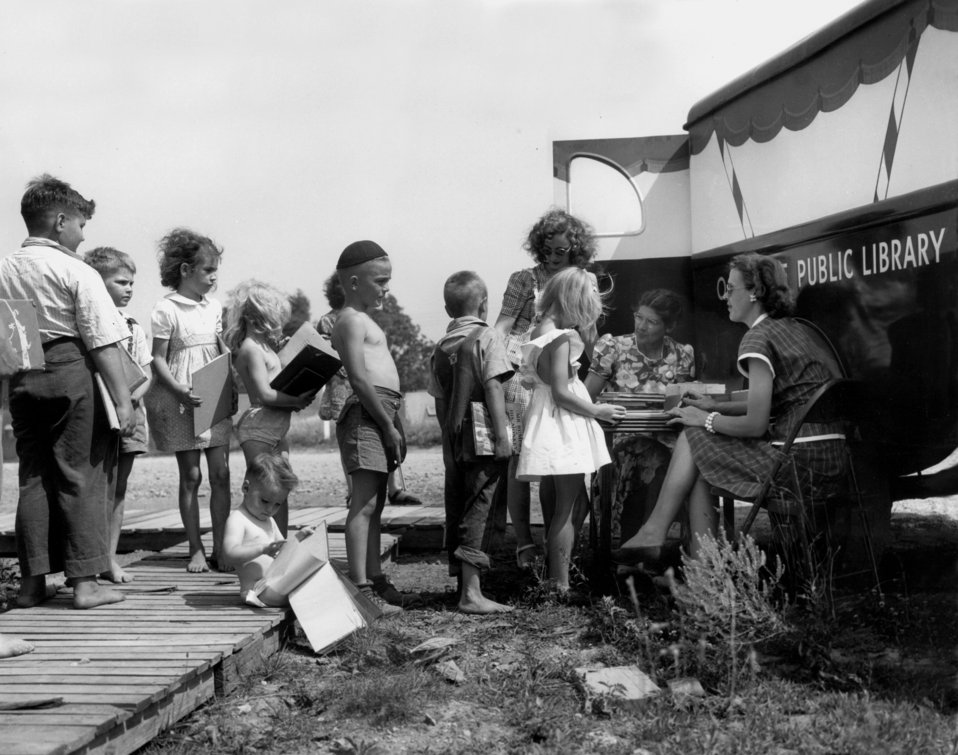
Traveling Library Oak Ridge

3136 DOE photo by Ed Westcott

Traveling Library Oak Ridge Tennessee 1946